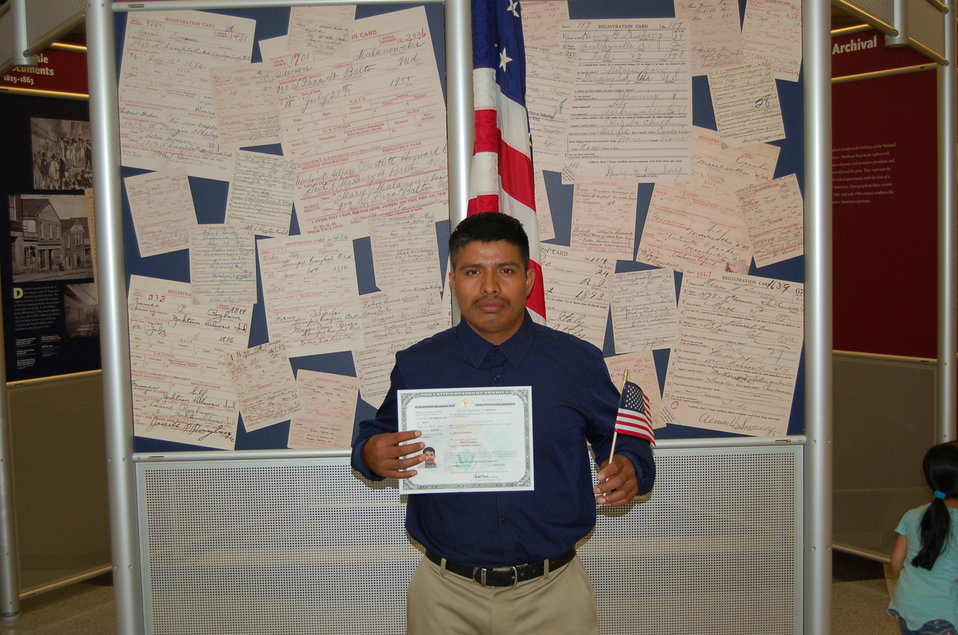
New Citizens